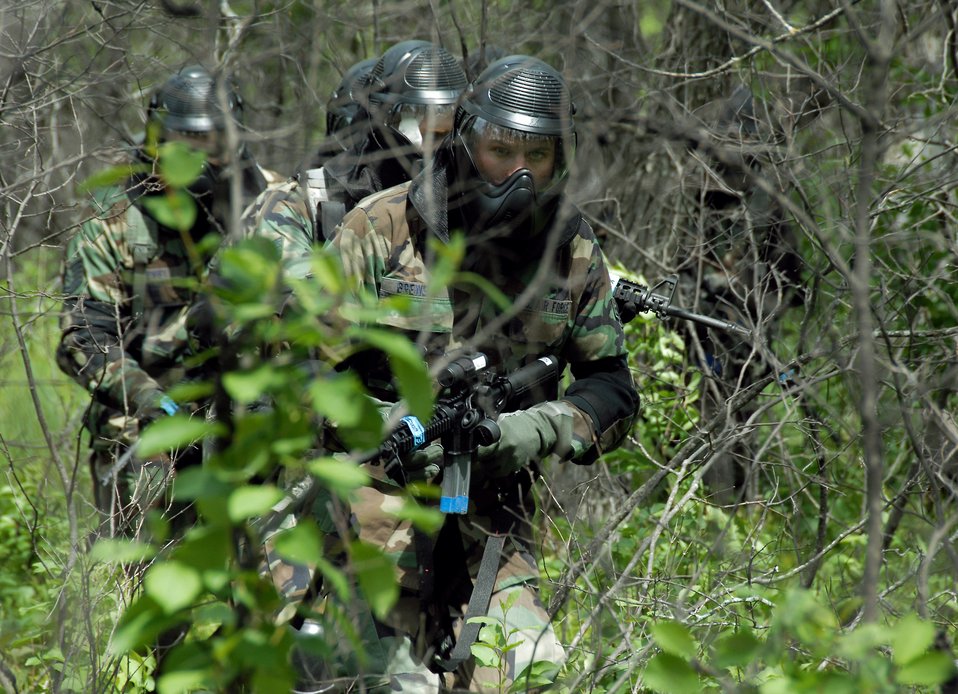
I've got the blues

In special protective gear for paintball use, Senior Airman Christopher Brewer leads the way June 2 at Camp Gilbert C. Grafton, N.D. The security force members are participating in realistic war-time tactics using paintball weapons to confirm shot placement.